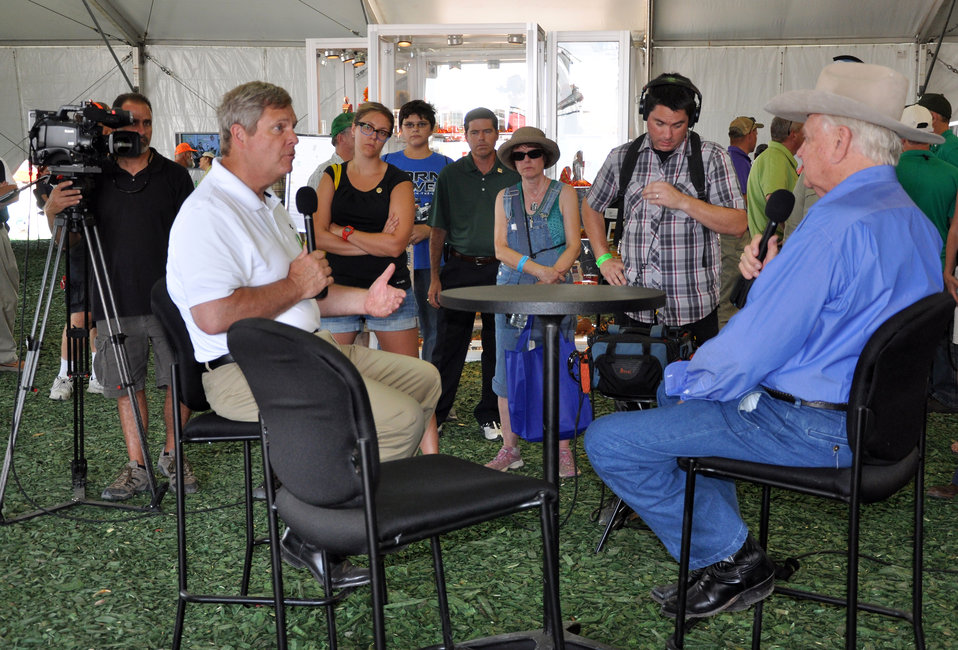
Agriculture Secretary Tom Vilsack is interviewed by veteran broadcaster Orion Samuelson during the 2012 Farm Progress Show in Boone, Iowa, on Aug. 30, 2012.